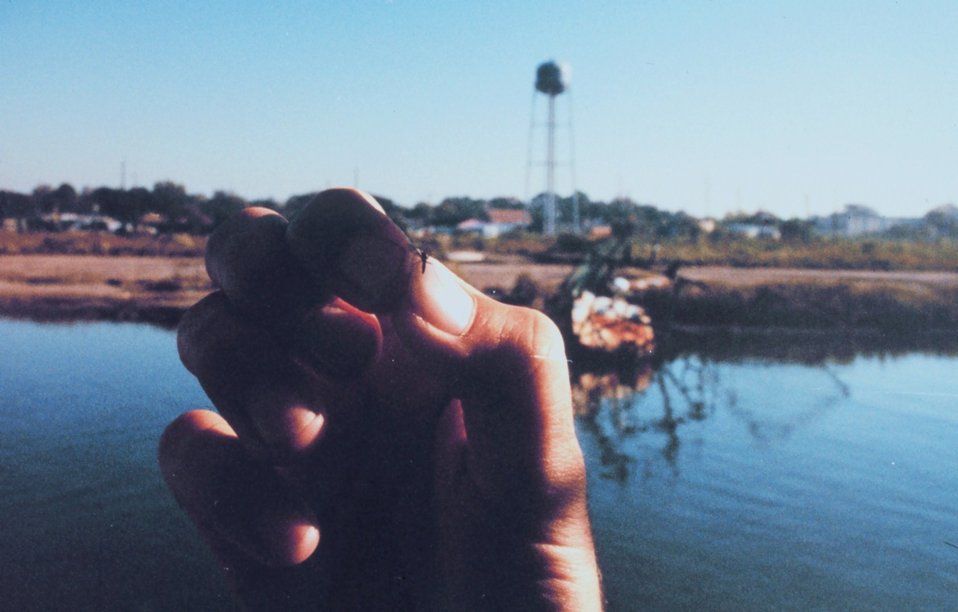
The ubiquitous mosquito of bayou country